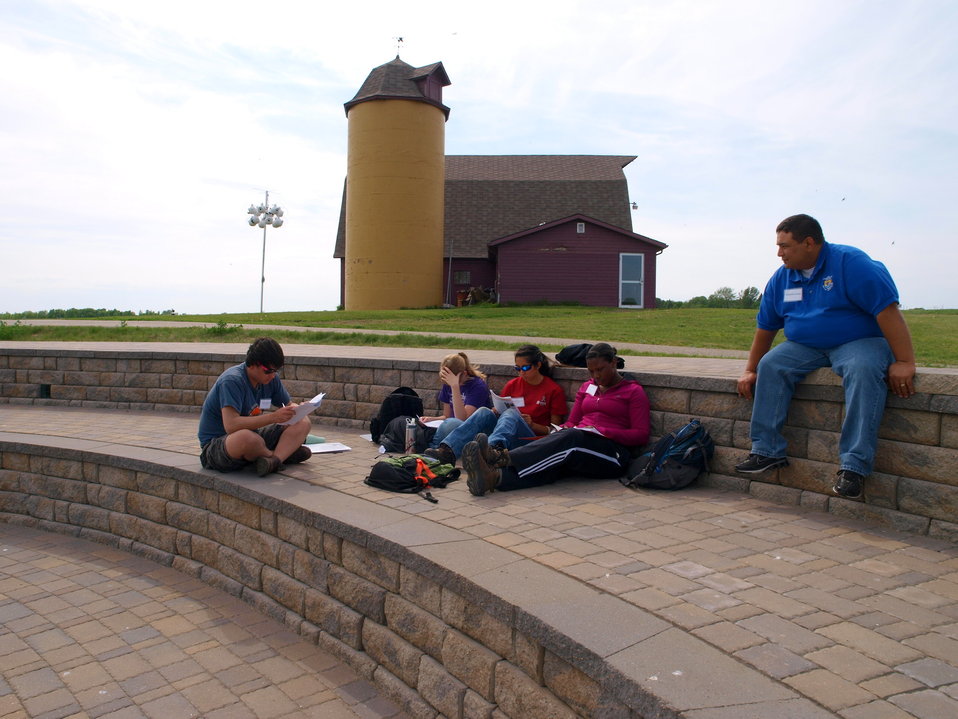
CDIP 2012 Fergus Falls

Alejandro and his menthes